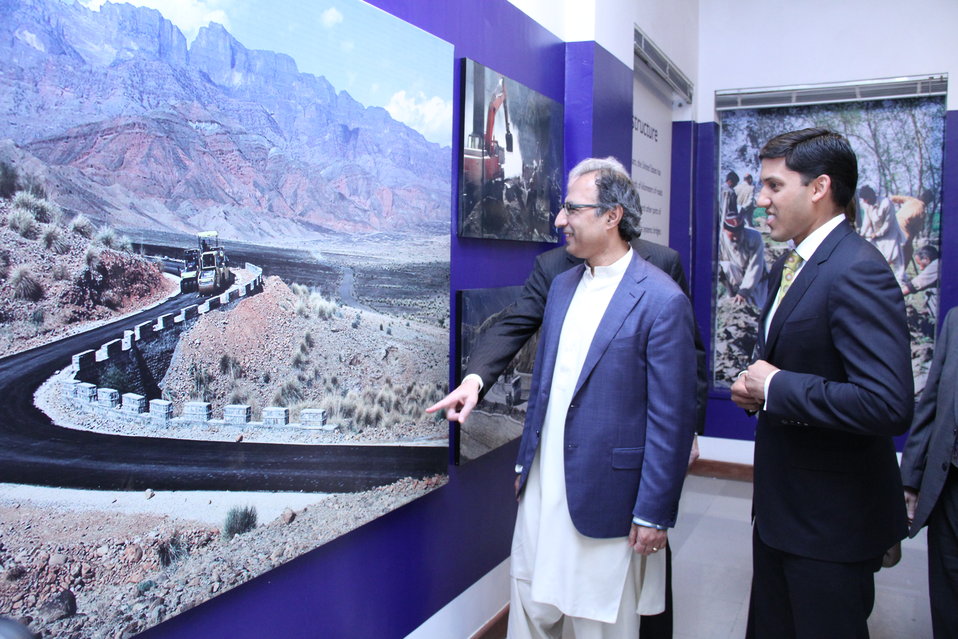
Photo Exhibition Celebrate US-PAK Cooperation at PNCA, Islamabad on April 13, 2012